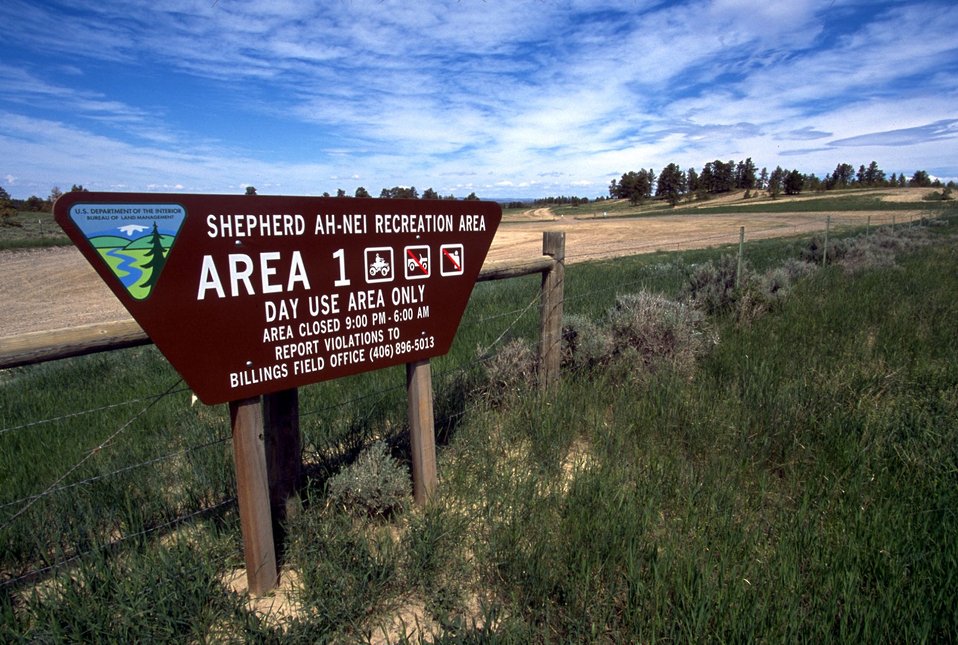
View of the parking lot and sign for the Shepherd Ah-Nei Recreation Area, Area 1